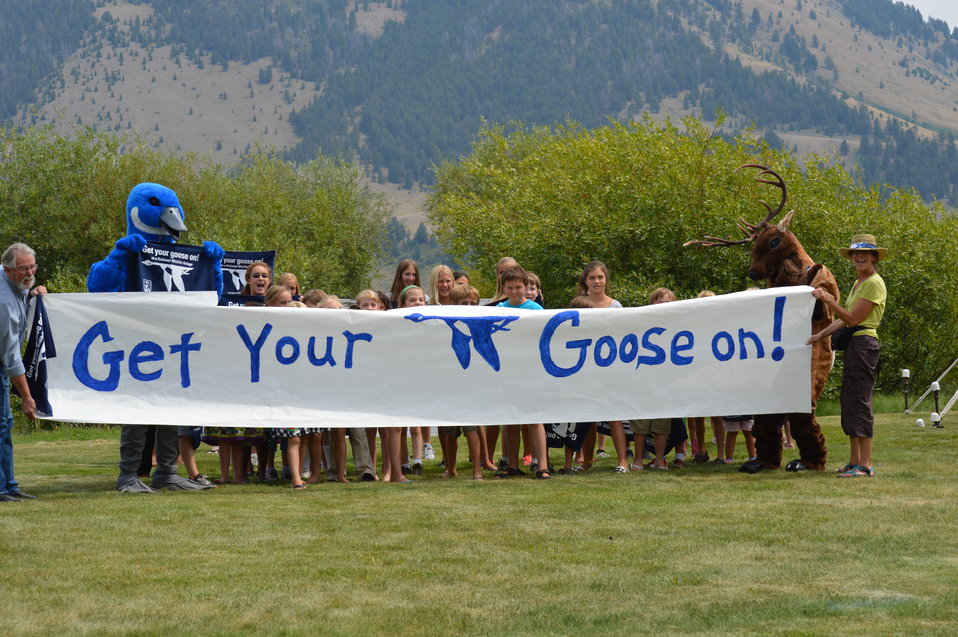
Get Your Goose On! - National Elk Refuge Style

On August 10, 2012 the U.S. Fish and Wildlife Service and Partners celebrated the 100 year anniversary of the establishment of the National Elk Refuge. In these photos, young attendees, along with Puddles the Blue Goose and the National Elk Refuge's mascot, showed us how to Get Your Goose On! with style.